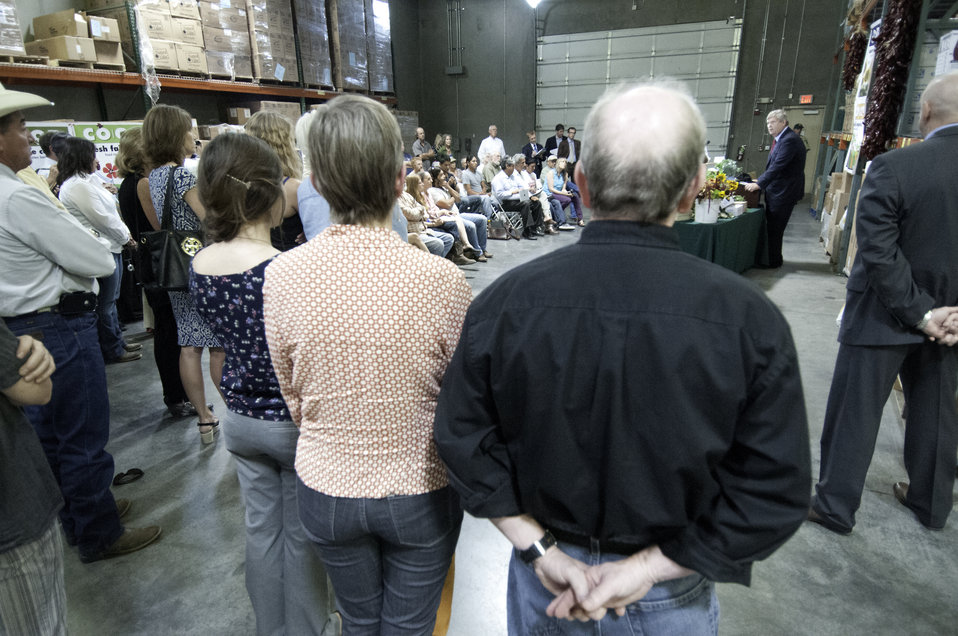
Agriculture Secretary Tom Vilsack meets with New Mexico producers and community stakeholders to highlight the U.S. Department of Agriculture’s (USDA) StrikeForce Initiative opportunities and the importance of comprehensive immigration reform in Albuquerque, NM on Thursday, Jun. 20, 2013.